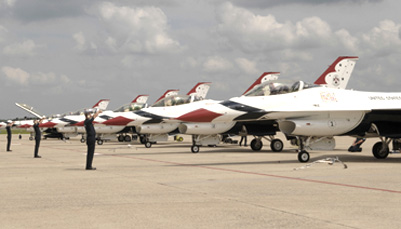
Thunderbirds to fly with alternative fuel

Maintainers signal to returning Thunderbirds pilots May 16, 2011, during a practice run for an upcoming aerial show during the Joint Services Open House May 20 to 21, 2011, at Andrews Air Force Base, Md. During the show, the Thunderbirds plan to fly with Camelina-based hydrotreated renewable jet fuel.